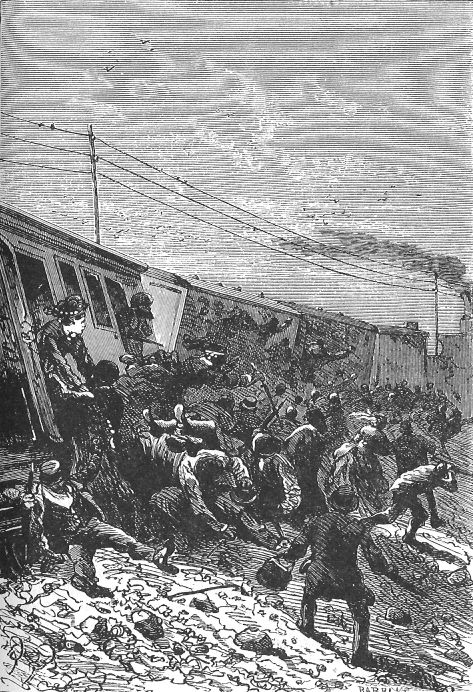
An illustration from the novel 'Michael Strogoff: The Courier of the Czar' by Jules Verne drawn by Jules Férat. Polski: Ilustracja powieści Juliusza Verne'a 'Michał Strogow, kurier carski' autorstwa Julesa Férata. Français : 'Michel Strogoff. Le courier du tzar', Jules Férat. Français : Voyageurs plus ou moins bousculés, cris…